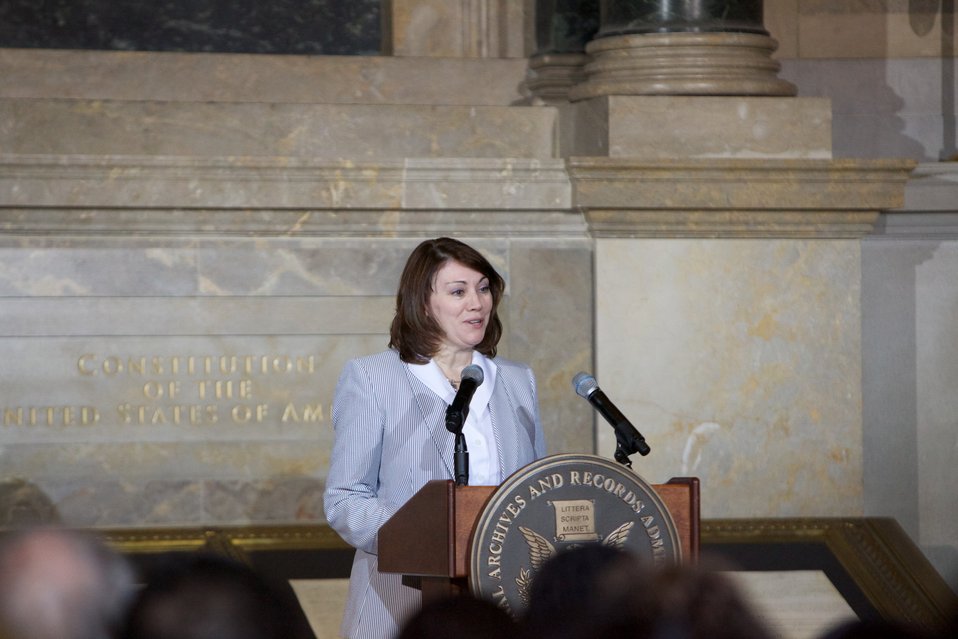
Naturalization Ceremony with Michelle Obama